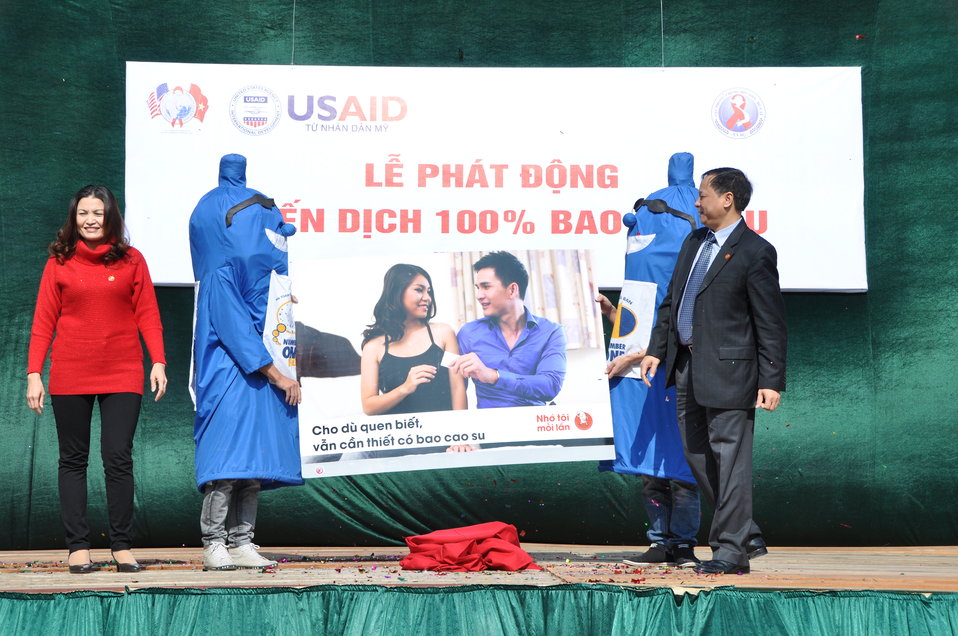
100% Condom Use Campaign Launch, Dec. 2, 2011